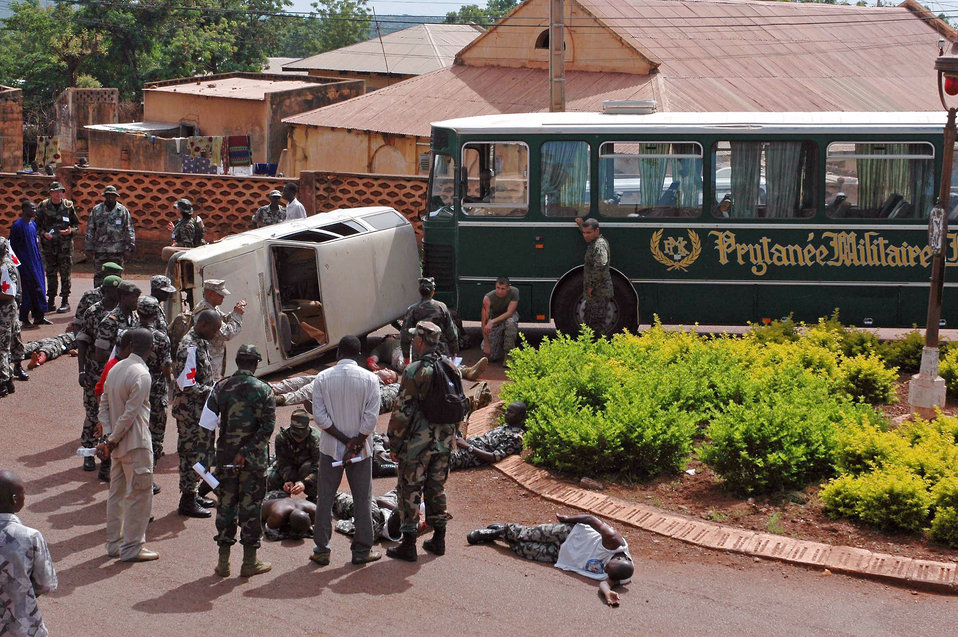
American and African medical personnel train together

Malian medics, doctors and nurses put their skills to the test during a mass casualty exercise July 18 which kicked off in the village of Kati, Mali. The mass casualty scenario is part of MEDFLAG 08, a multi-national medical training exercise designed to enhance medical capabilities and readiness for U.S. and African forces.